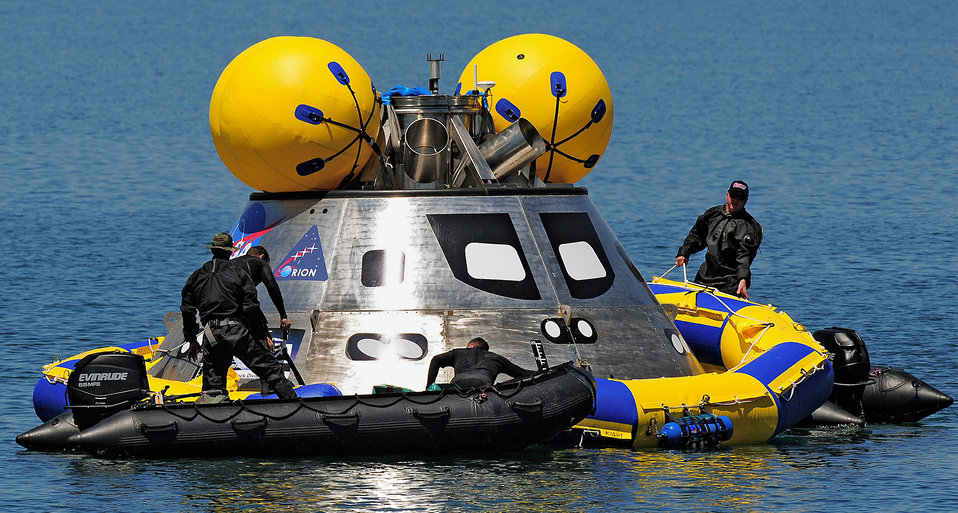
Will it float?

Air Force Reserve Command's 920th Rescue Wing pararescuemen position an inflatable flotation collar around a mockup of the Orion space capsule during recovery testing near Cape Canaveral Air Force Station, Fla. The collar stabilizes the capsule after water landing.